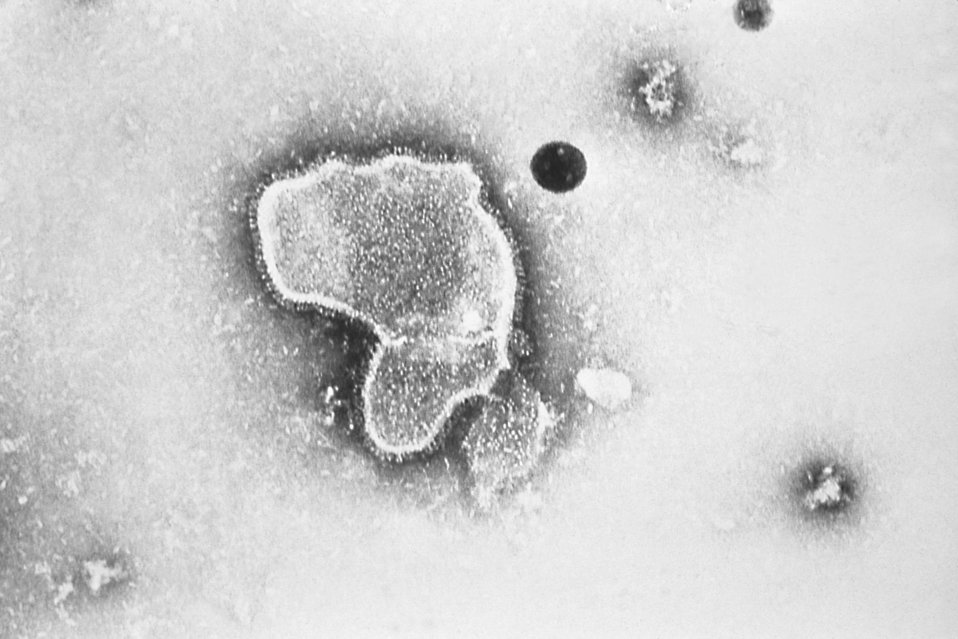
Thic electron micrograph reveals the morphologic traits of the Respiratory Syncytial Virus (RSV).